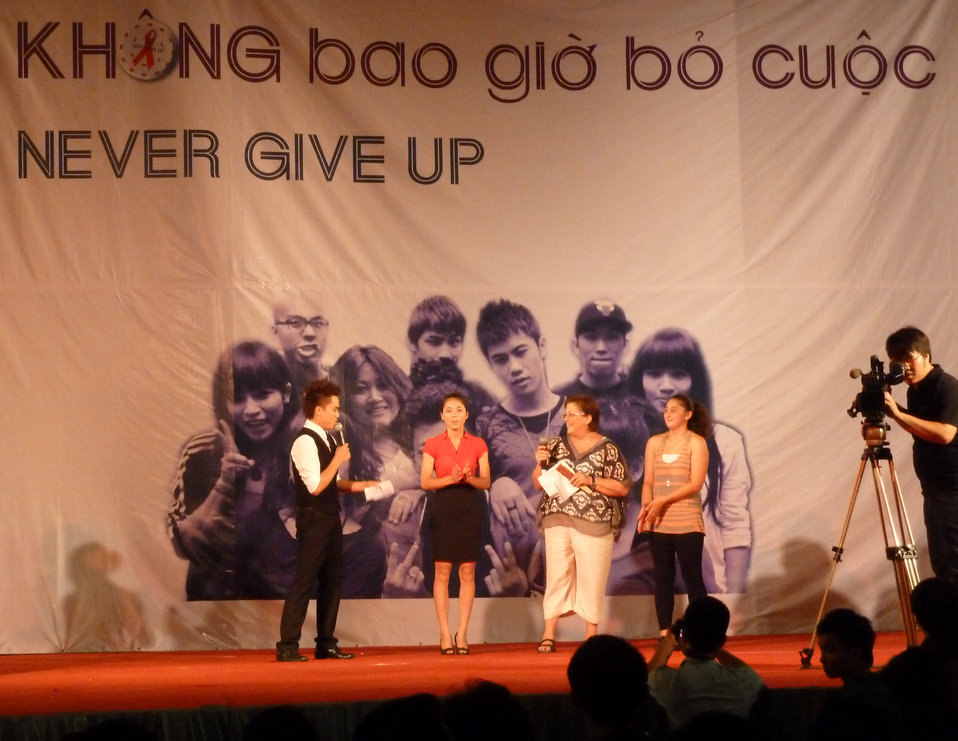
U.S. Embassy Deputy Chief of Mission Claire Pierangelo raps on state to the hip hop against HIV/AIDS beat.

PEPFAR Sponsors Hip Hop to Stop the Spread of HIV